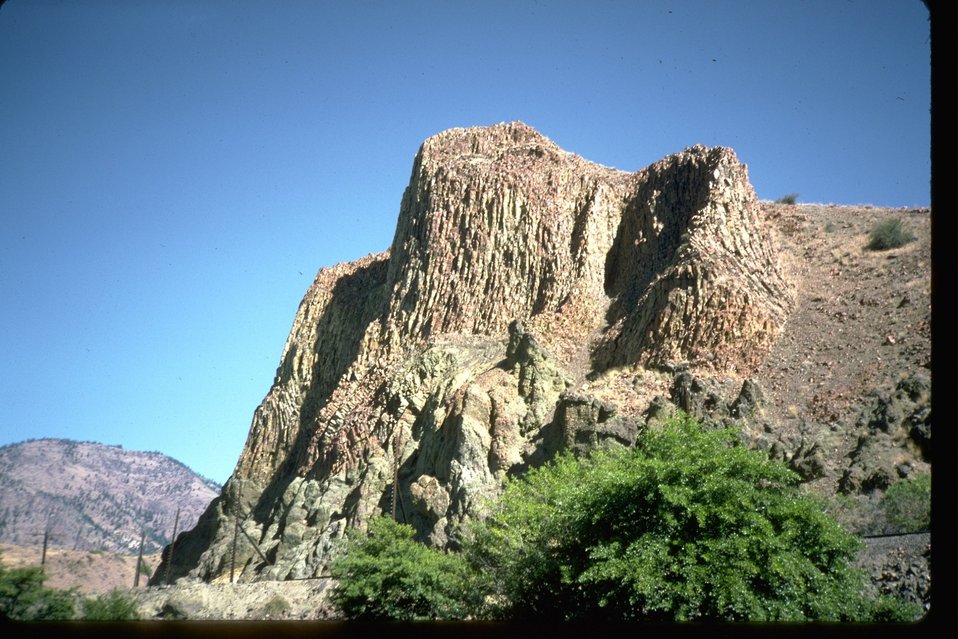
Large rock formation in the Upper Whitehorse Area.